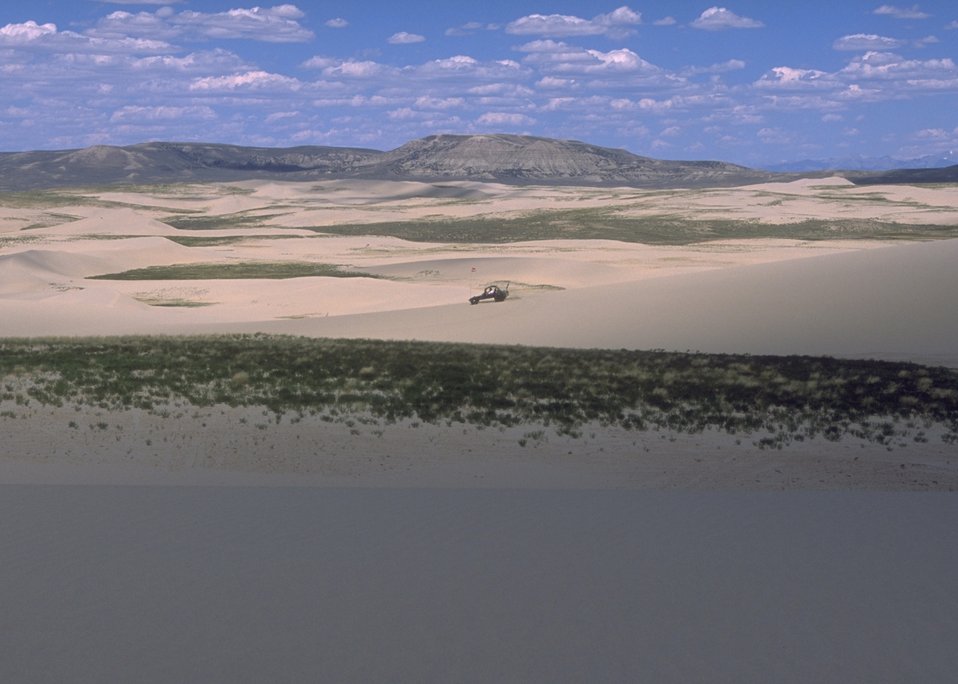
Sand Dunes OHV Area, Rock Springs Field Office.